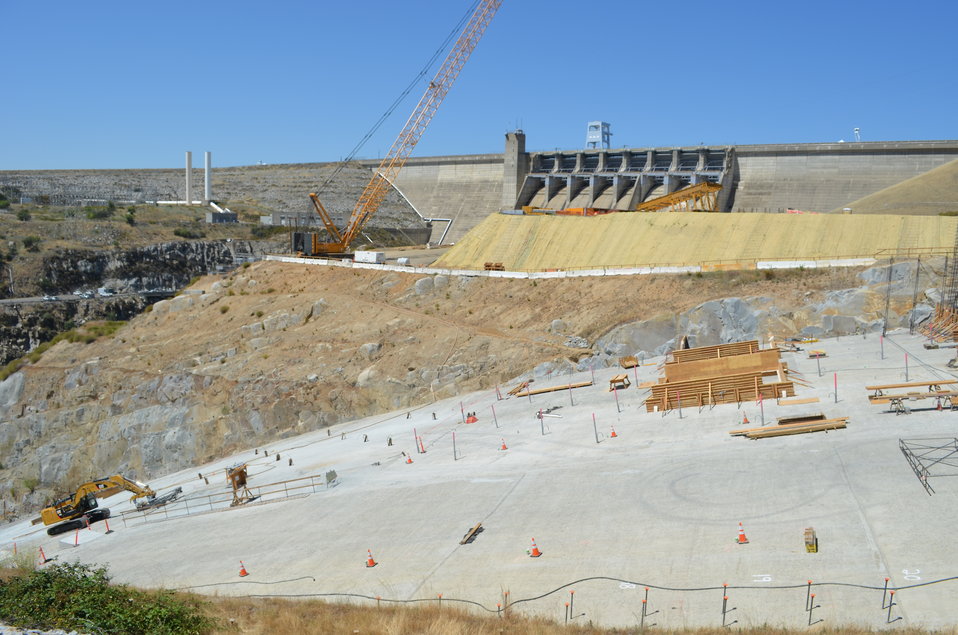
Assistant Sec. of the Army for Civil Works visits JFP

Paving of the Folsom Dam auxiliary spillway’s outlet chute continues June 3, 2014, in Folsom, Calif. The spillway project, a partnership of the U.S. Army Corps of Engineers, the U.S. Bureau of Reclamation and state and local partners, is designed to reduce flood risk throughout the Sacramento region.